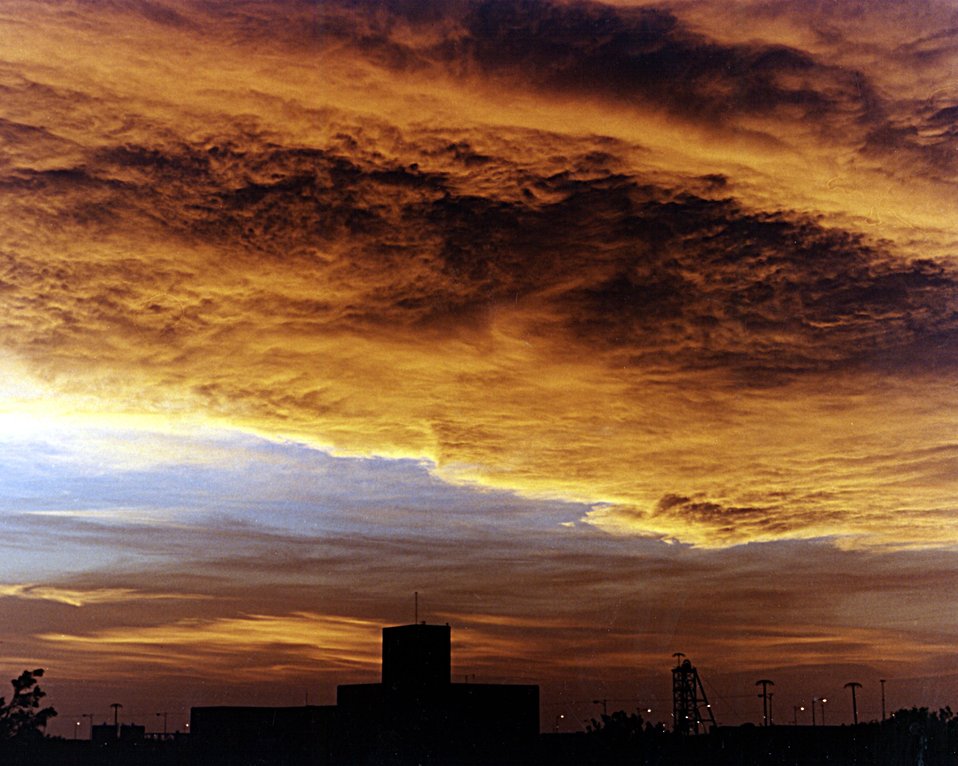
WIPP RED SUNSET.

THE WASTE ISOLATION PILOT PLANT IS A DOE RESEARCH AND DEVELOPMENT FACILITY FOR DEMONSTRATING THE SAFE DISPOSAL OF TRANSURANIC RADIOACTIVE WASTE. FOUR VERTICAL SHAFTS CONNECT THE SURFACE FACILITIES TO THE UNDERGROUND. THE SHAFTS, ONE 21 FEET IN DIAMETER AND THE OTHERS 14 FEET IN DIAMETER, PROVIDE A MEANS OF TRANSPORTING THE WASTE, WORKERS, EQUIPMENT, MINED SALT, AND FRESH AIR FROM THE SURFACE TO THE UNDERGROUND SALT ROCK FORMATION THAT IS BEING TESTED TO DETERMINE SUITABILITY FOR RADIOACTIVE WASTE STORAGE. RADIOACTIVE BIN-SCALE TESTS ARE SCHEDULED TO BEGIN BEFORE THE END OF 1991.